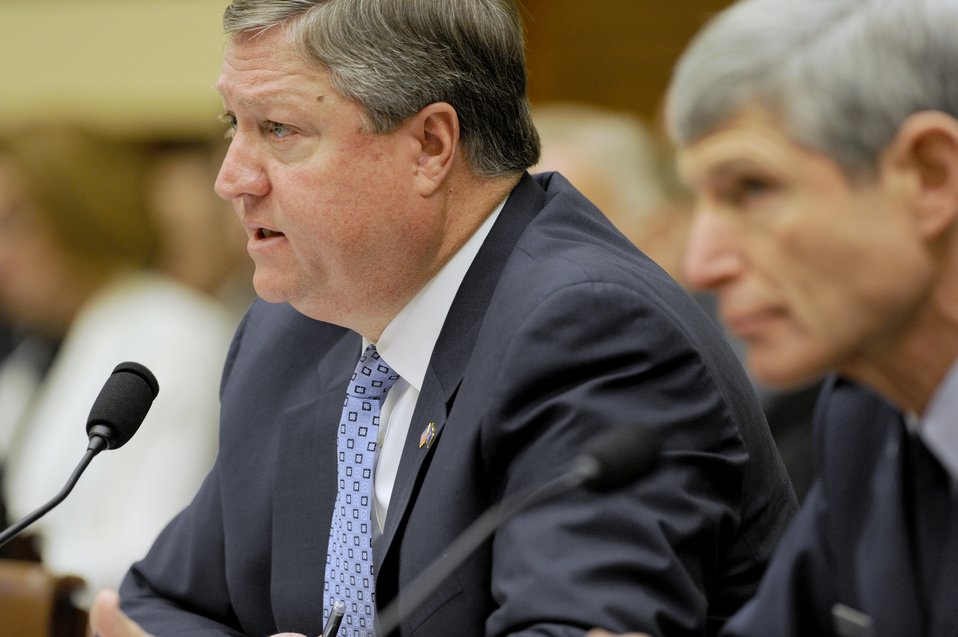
Chief of staff's testimony addresses 'Don't Ask, Don't Tell' repeal initiative

Secretary of the Air Force Michael Donley testifies before the House Armed Services Committee along with Air Force Chief of Staff Gen. Norton Schwartz Feb. 23, 2010, in the Rayburn House Office Building on Capitol Hill. The committee met to receive testimony on the fiscal 2011 Air Force budget request.